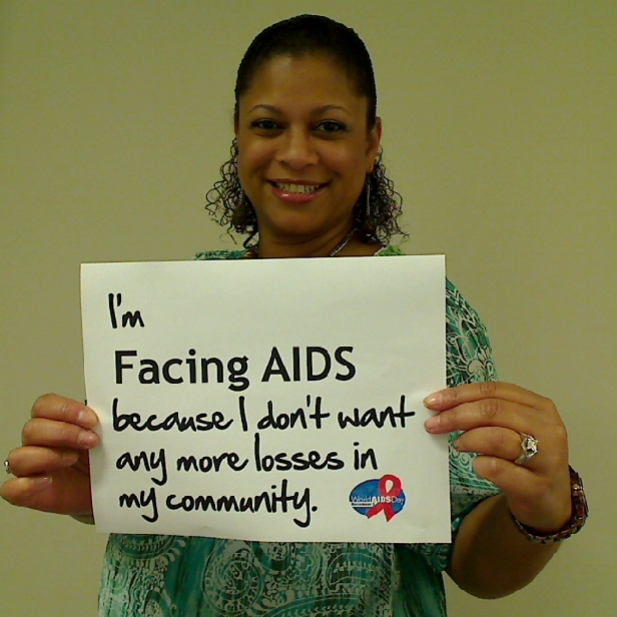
I'm Facing AIDS because I don't want any more losses in my community.